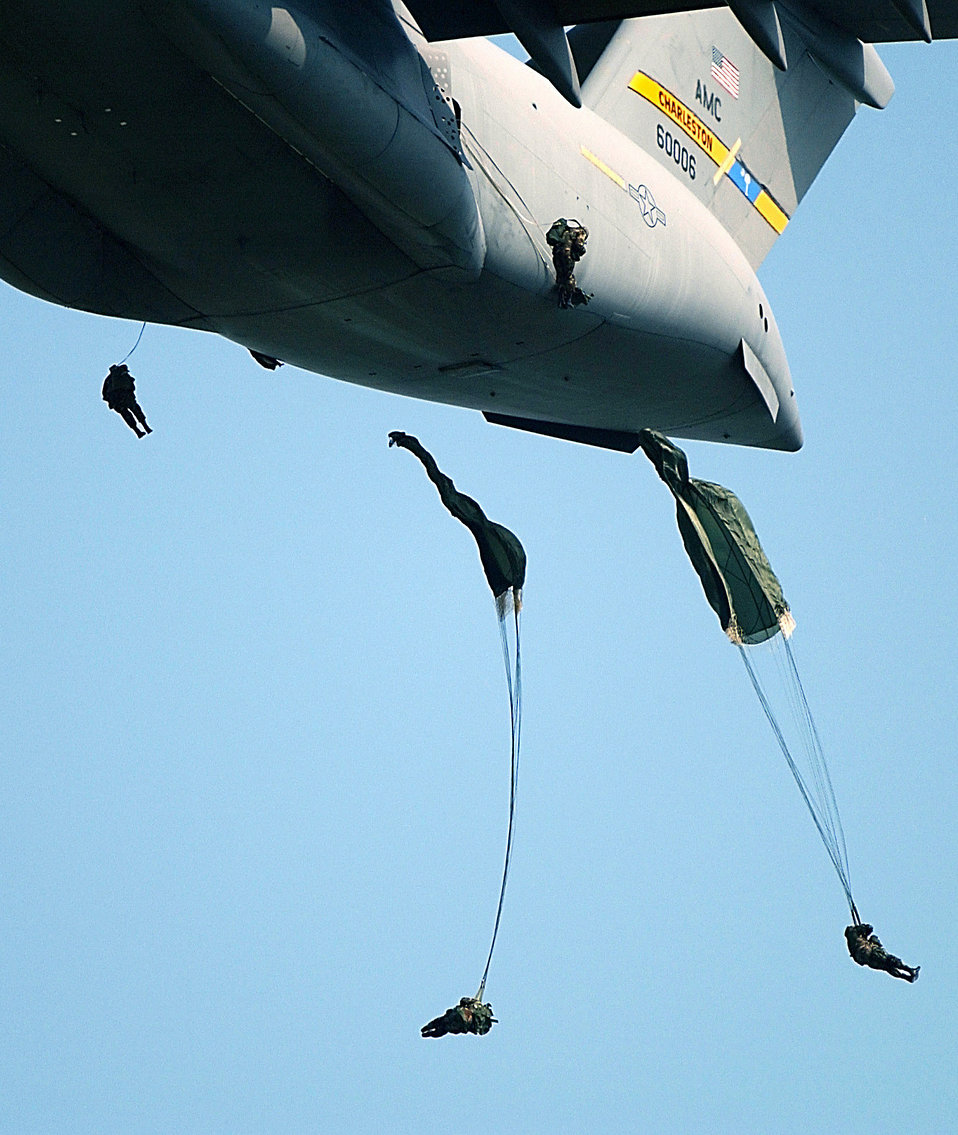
Geronimo!

CHARLESTON, S.C. -- Members of the Army's 82nd Airborne Division from Fort Bragg, N.C., jump from a C-17 Globemaster III. The jump was part of the 82nd Airborne Division Association's annual convention here. Three hundred members of the 82nd exited from C-17s in six passes, 50 jumpers at a time. The transport is assigned to the 15th Airlift Squadron at Charleston Air Force Base, S.C.